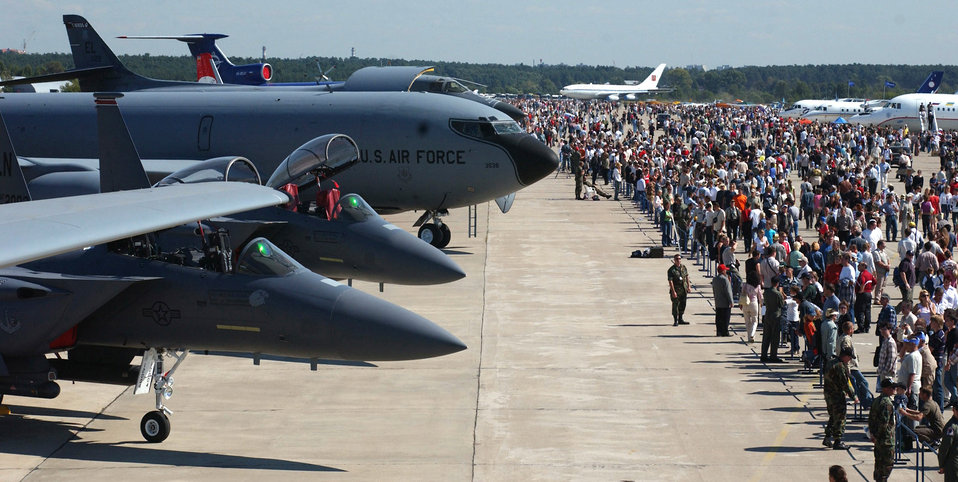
U.S. aircraft, troops popular at Moscow air show

ZHUKOVSKY, Russia -- Two American F-15E Strike Eagles, a KC-135 Stratotanker and a B-1B Lancer sit as static displays on Ramenskoye Airfield here Aug. 21 during the Moscow International Aviation and Space Salon. Air show officials estimated that more than 750,000 people attended the six-day air show here.